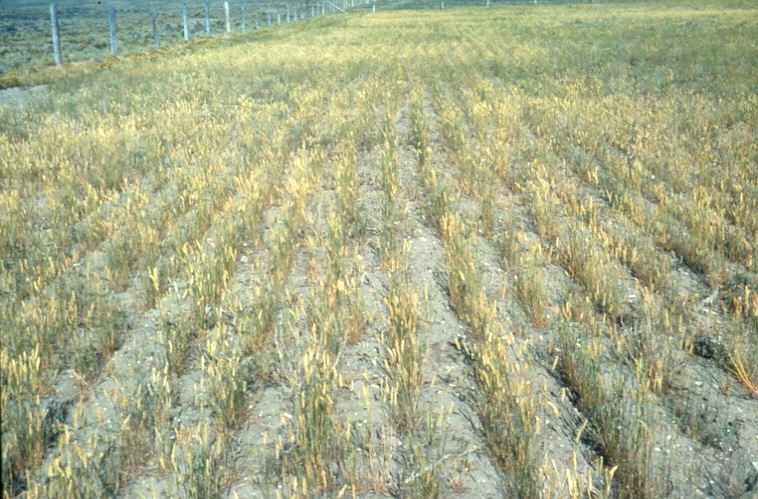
Crested Wheat Grass Salmon FIeld Office UCSC Upper Columbia Salmon Clearwater District